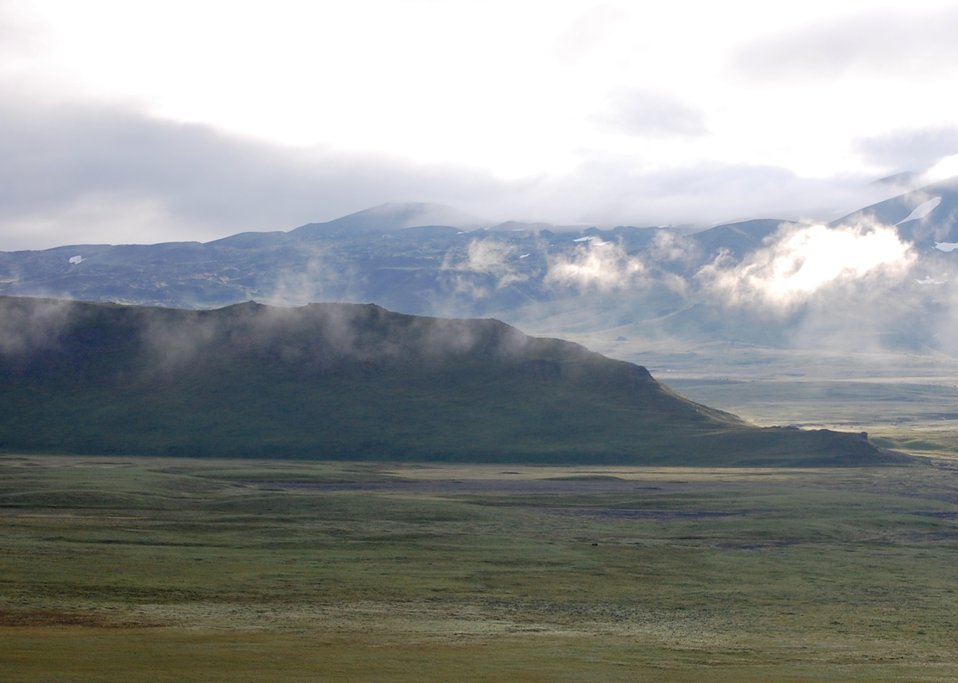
Whaleback Ridge

Northwest Unimak Island, Alaska Maritime National Wildlife Refuge